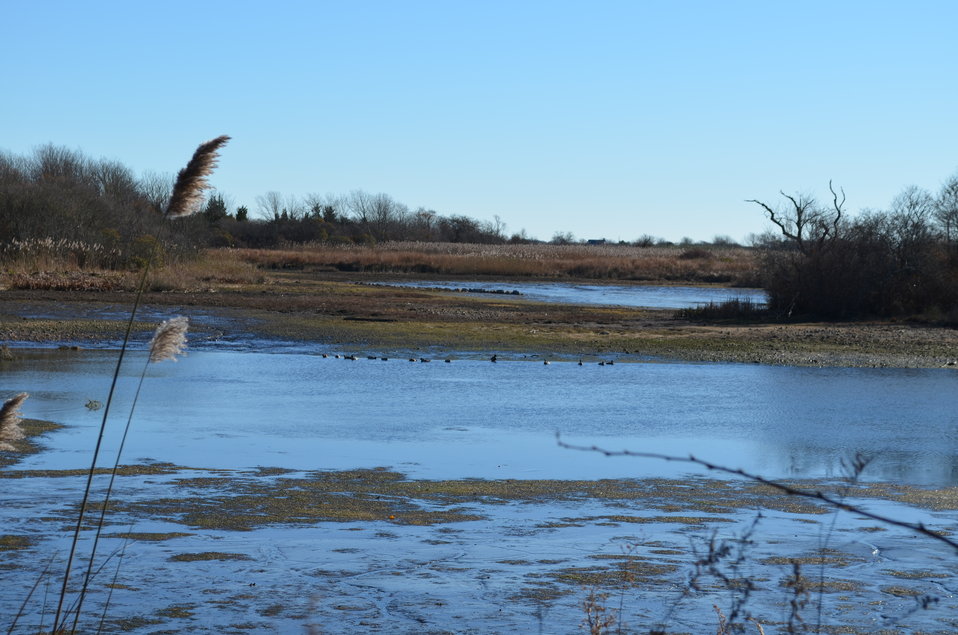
Emerging islands (RI)

Pre-Hurricane Sandy, small islands like these were submerged. Post-Hurricane Sandy caused a breach between saltwater from the ocean and freshwater from Trustom Pond National Wildlife Refuge. Following the storm, the water level, now saturated with saltwater, has continued to decrease.